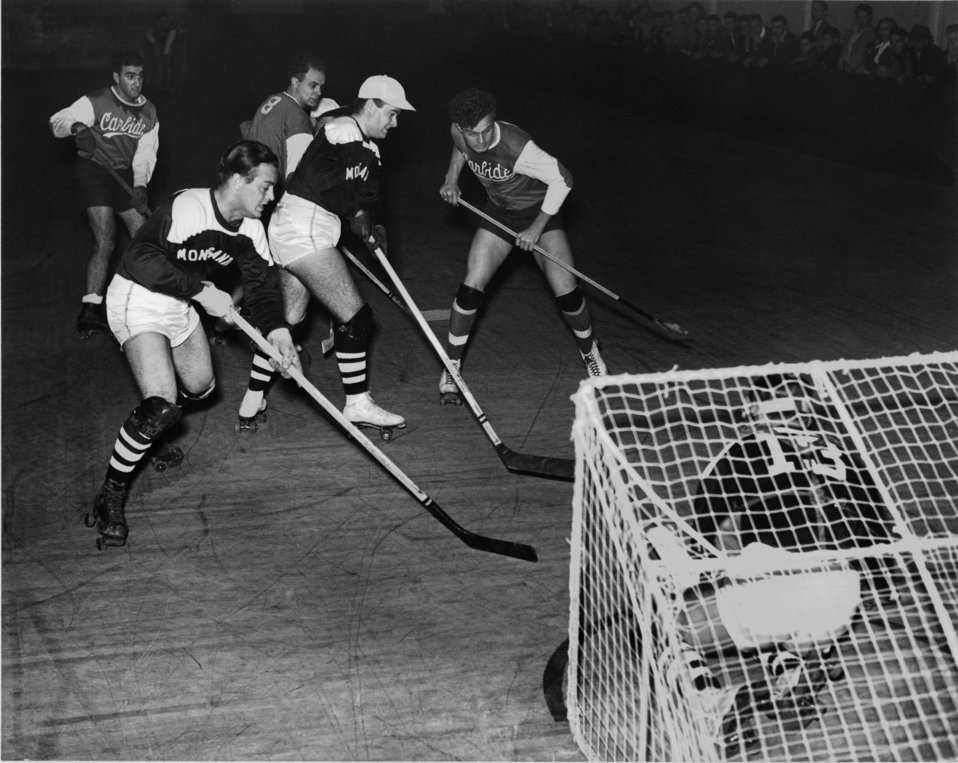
Roller Skate Hockey Oak Ridge

3155-1 DOE photo by Ed Westcott

Roller Skate Hockey Oak Ridge Tennessee 1946